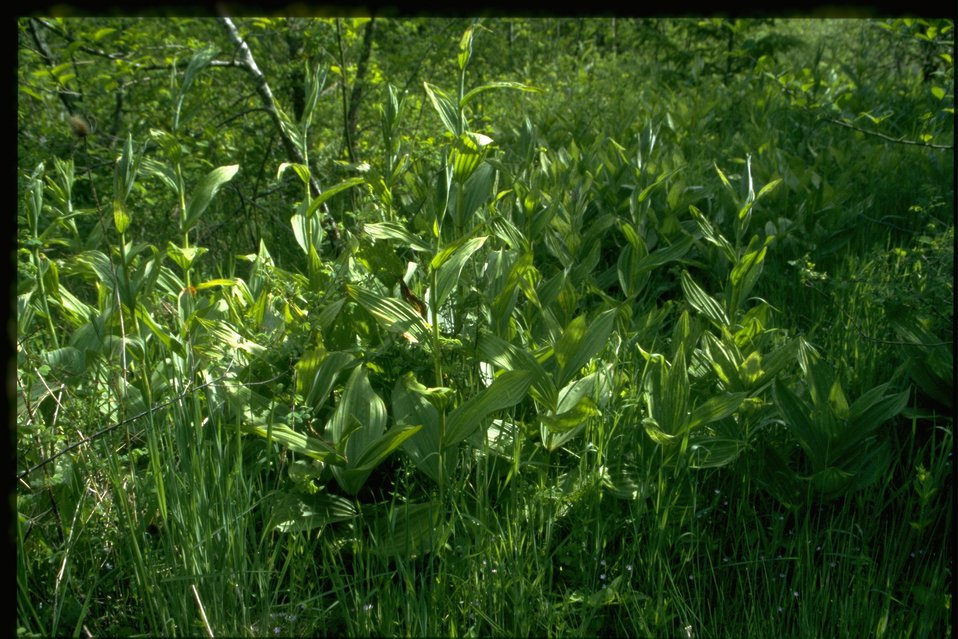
Farshot of Veratrum viride.